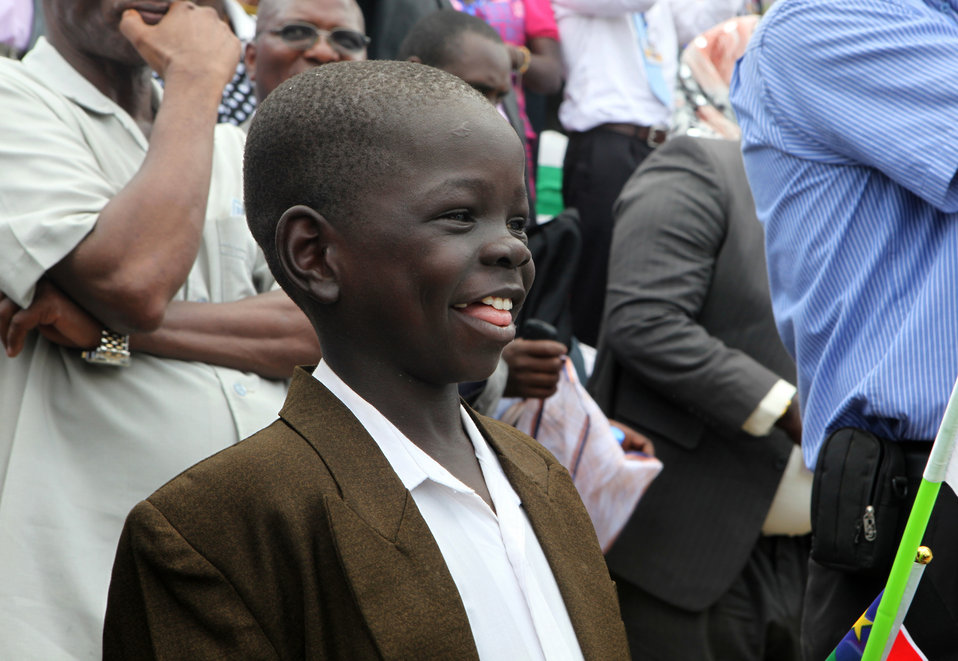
South Sudan Independence Day

A young boy smiles and sings along to the new Republic of South Sudan national anthem during celebrations in Juba, South Sudan on July 9, 2011.